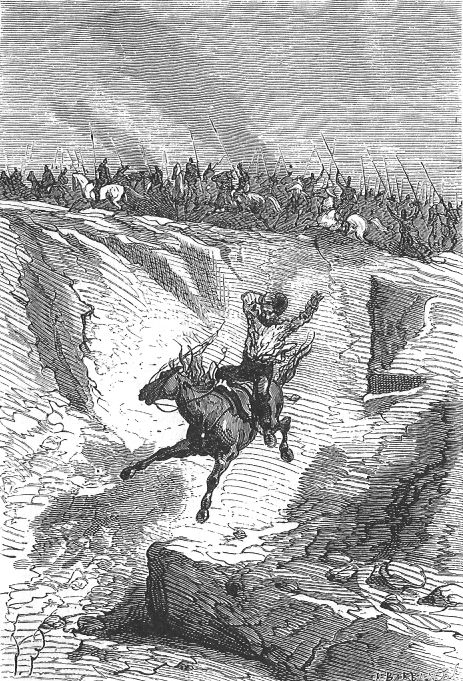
An illustration from the novel 'Michael Strogoff: The Courier of the Czar' by Jules Verne drawn by Jules Férat. Polski: Ilustracja powieści Juliusza Verne'a 'Michał Strogow, kurier carski' autorstwa Julesa Férata. Français : 'Michel Strogoff. Le courier du tzar', Jules Férat. Français : Le cheval se précipita avec son cavalier…